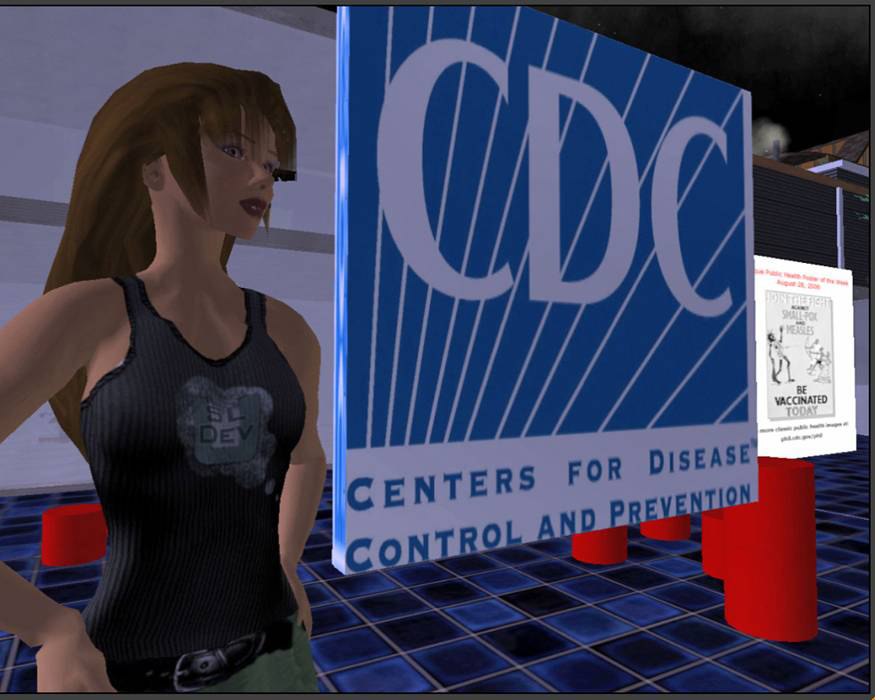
This computer-generated image depicts Hygeia Philo, the CDC's lead avatar in the virtual world of Second Life. This is the second design-stage of the avatar. She was metaphorically 'born' on July 13, 2006, coinciding with the 60th anniversary of CDC. John Anderton designed Hygeia Philo, whose name is based on the Greek meaning 'lover of health', to be the modern muse of health to serve as lead health spokesperson, and health educator in this new virtual space.